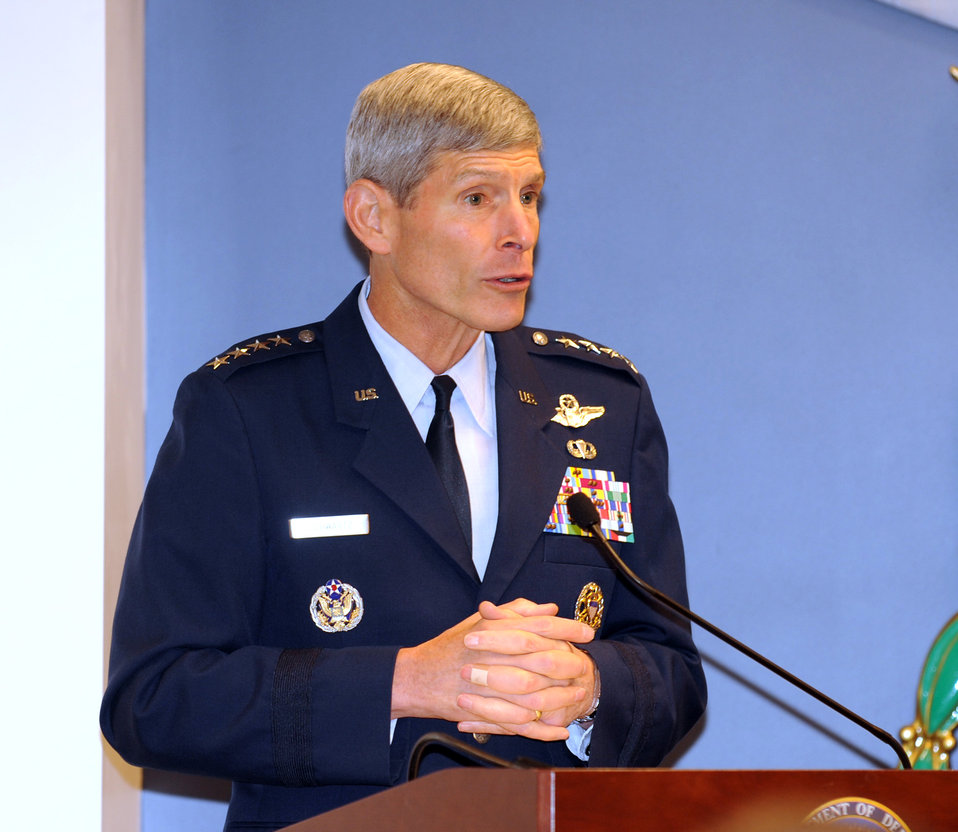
2011 Gen. and Mrs. Jerome F. O'Malley Award

Air Force Chief of Staff Gen. Norton Schwartz speaks about the accomplishments of Brig. Gen. Mark and Sara Dillon during the Gen. and Mrs. Jerome F. O’Malley Award presentation at a Pentagon ceremony Oct. 11, 2011, in Washington, D.C. The Dillons were honored with the award, presented annually to the wing commander and spouse whose contributions to the nation, Air Force and local community best exemplifies the highest ideals and positive leadership of a military couple in wing command positions.